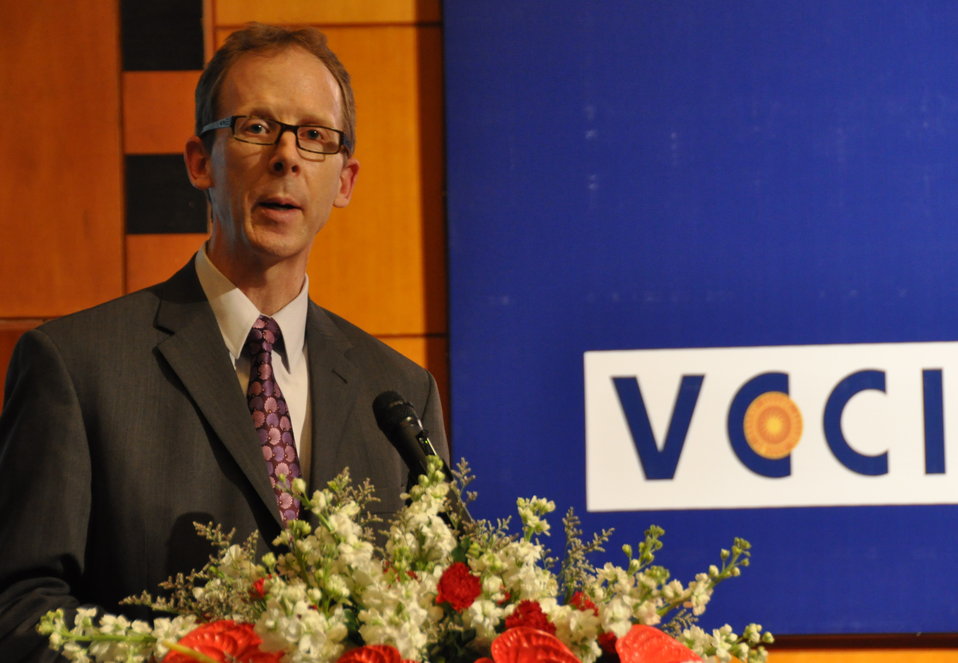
USAID Mission Director Joakim Parker

Hanoi, April 17, 2013